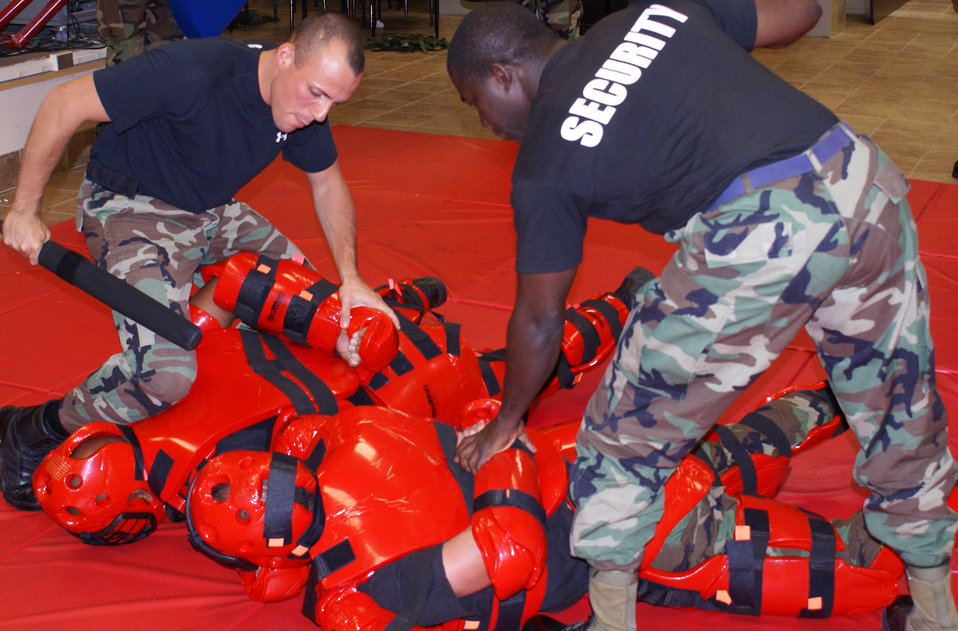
Security forces unarmed defensive tactics

Staff Sgt. Daniel Malerba and Airman 1st Class Sylvain Michael use unarmed defensive tactics to gain positive control over two instructors acting as unruly citizens during an unarmed defensive tactics training scenario Feb. 10 at Homestead Air Reserve Base, Fla. Both are assigned to the 482nd Security Forces Squadron.